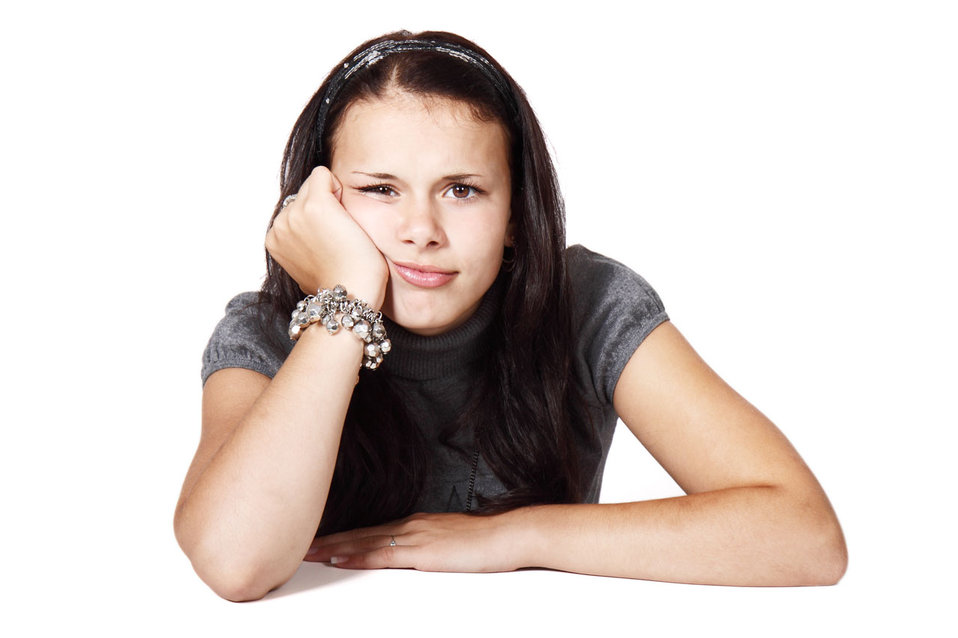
Young woman bored isolated on white background.